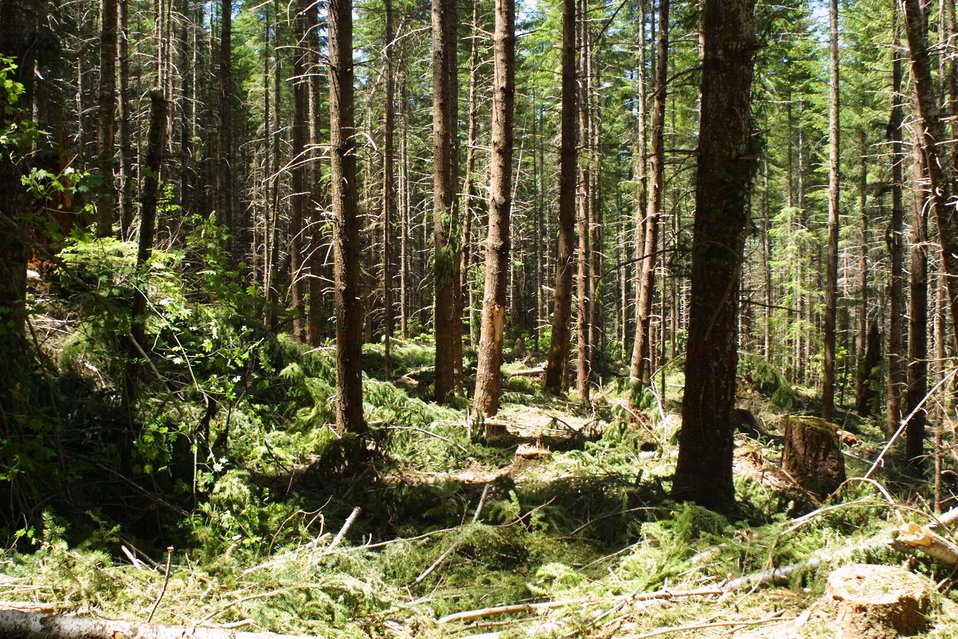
Camas East Timber Sale in Late Successional Reserve.